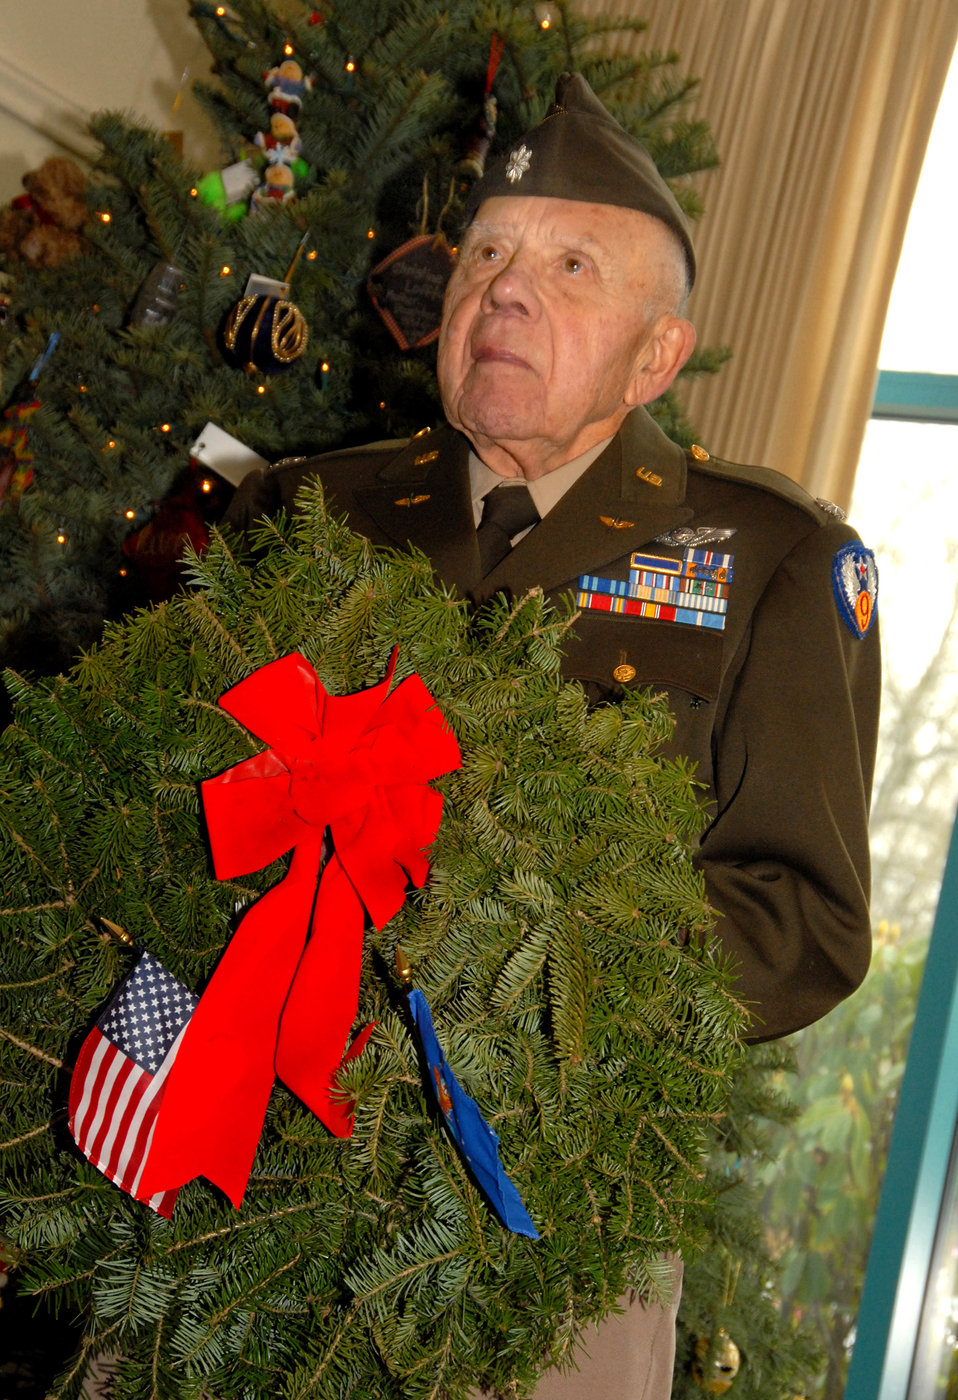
Honoring our veterans

Retired Air Force Lt. Col. Arthur Perkins holds a wreath during a